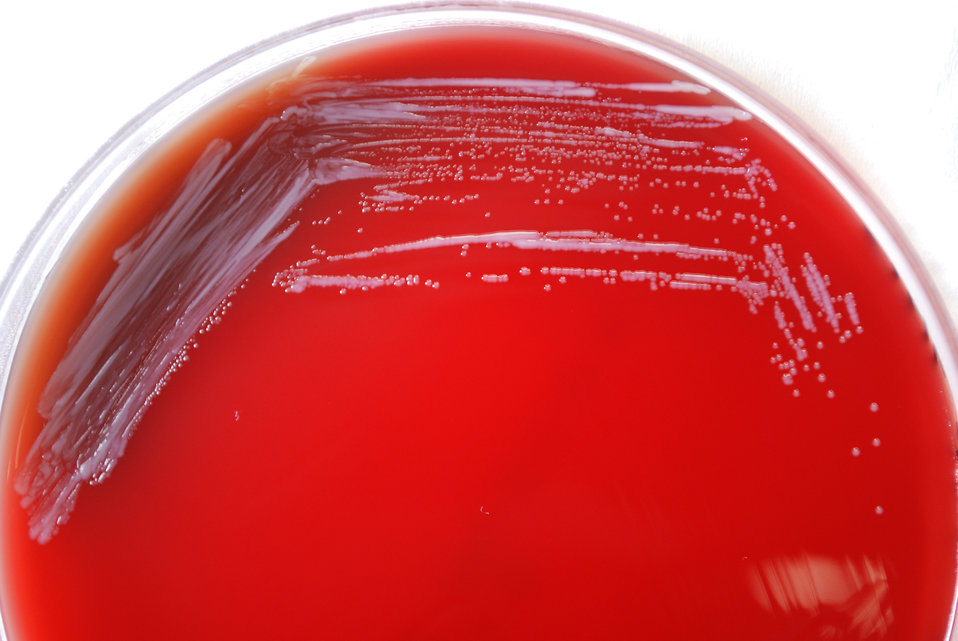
A closer view of PHIL 12257, this photograph depicts the colonial morphology displayed by Gram-negative Brucella abortus bacteria, which was grown on a medium of sheep blood agar (SBA), for a 48 hour time period, at a temperature of 37�C. This Petri dish and its contents were incubated in a CO2 incubator. B. abortus bacteria are known to cause the disease brucellosis.